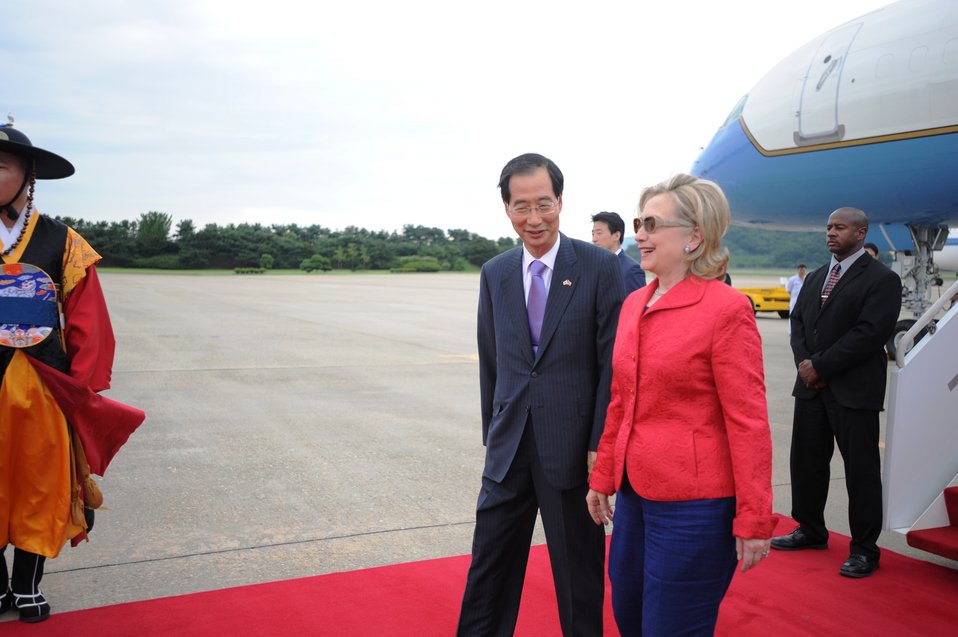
Secretary Clinton Is Escorted By Republic of Korea Ambassador to the U.S. Han Duck-soo

U.S. Secretary of State Hillary Rodham Clinton is escorted by Republic of Korea Ambassador to the United States Han Duck-soo upon her arrival in Seoul, South Korea, on July 21, 2010.